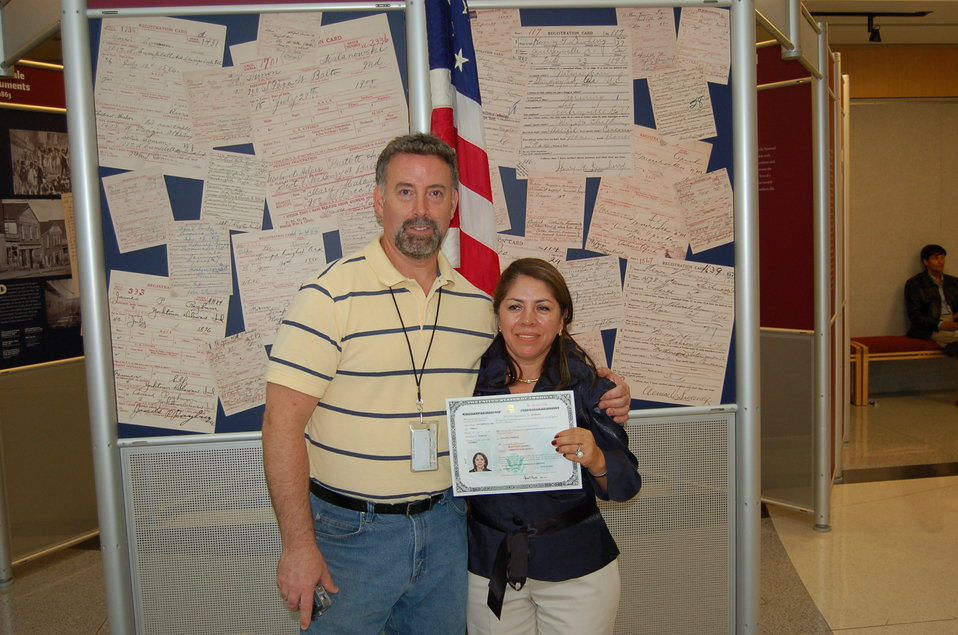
New Citizens